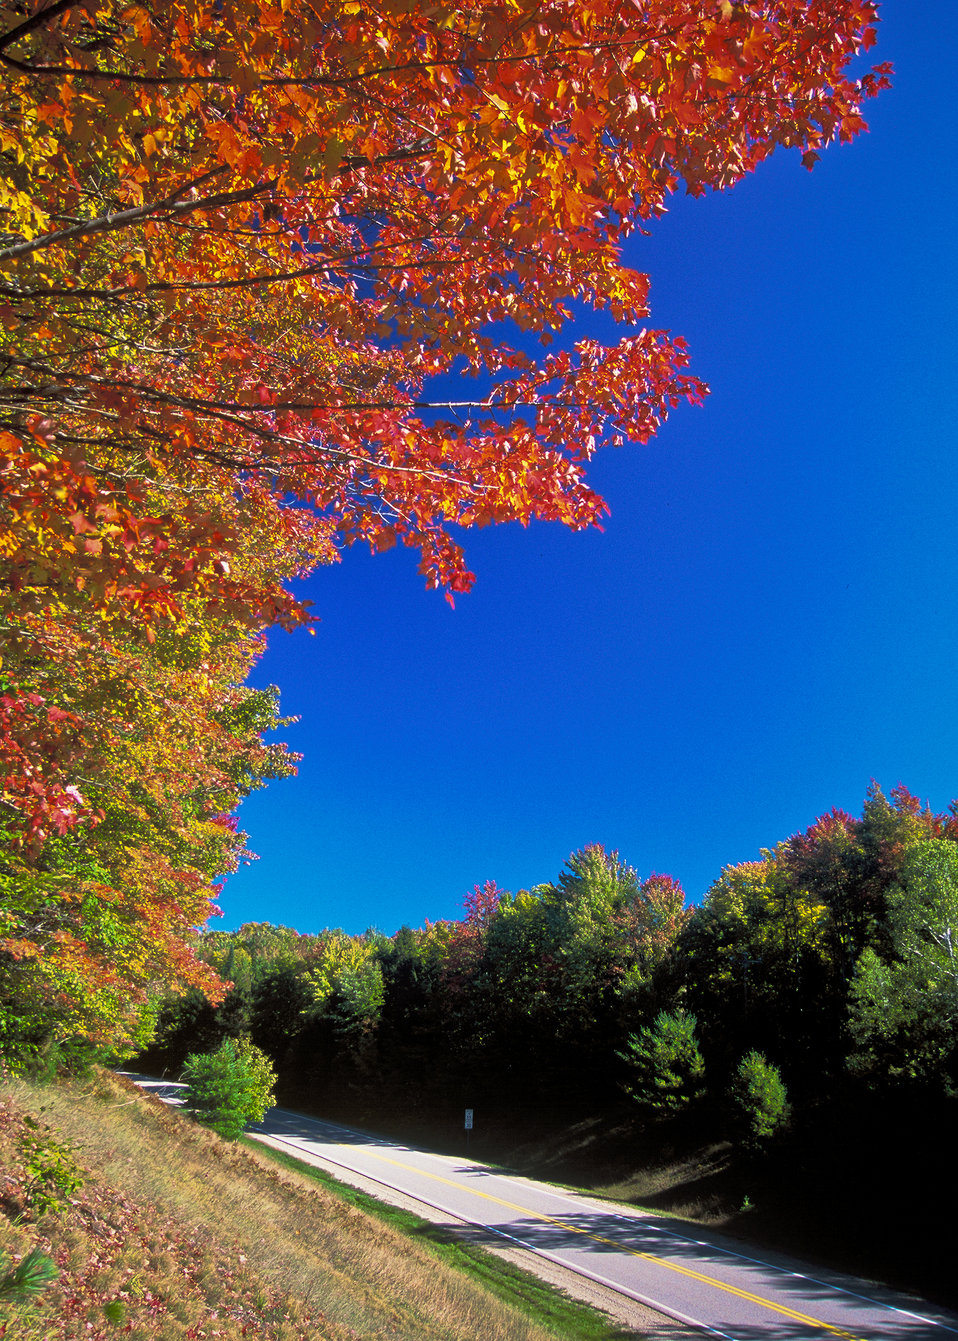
Fall is one of, or possibly the most popular seasons to visit the National Forests of United States. A bicycle trip, drive or hike through the Hiawatha National Forest on the Upper Peninsula of Michigan offers a vivid picturesque journey hard to match.